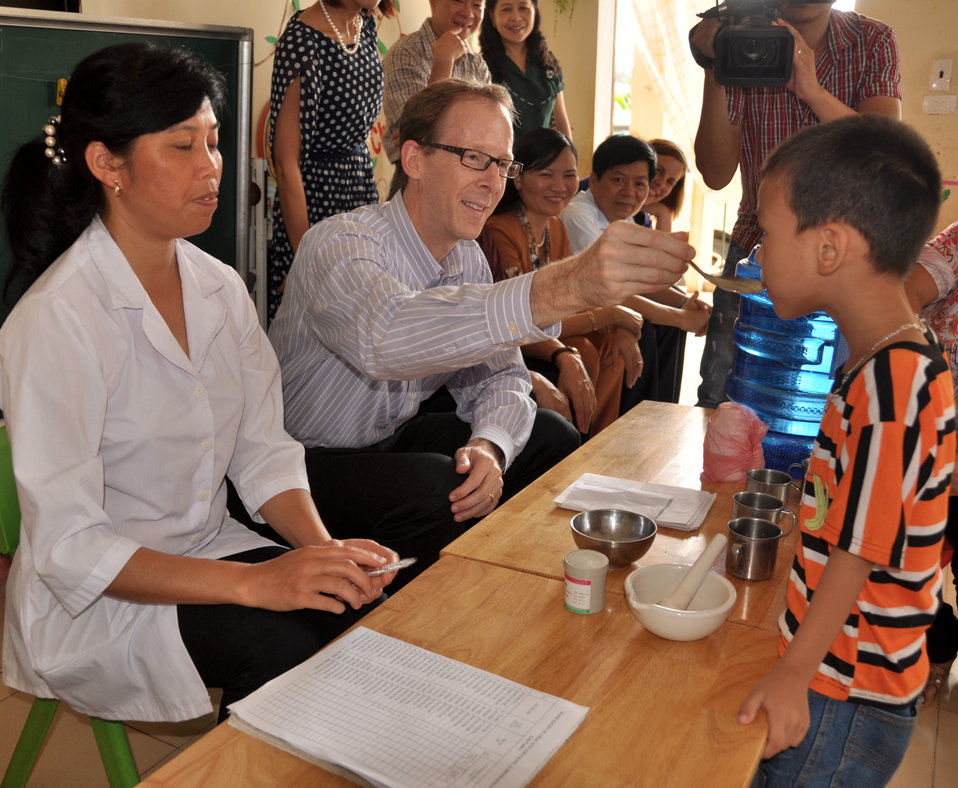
USAID Delivers Deworming Medication to Kindergartners in Nam Dinh Province

USAID Mission Director Joakim Parker gives a dose of deworming medicine to kindergarten children in Nam Dinh Province.

June 1, 2013